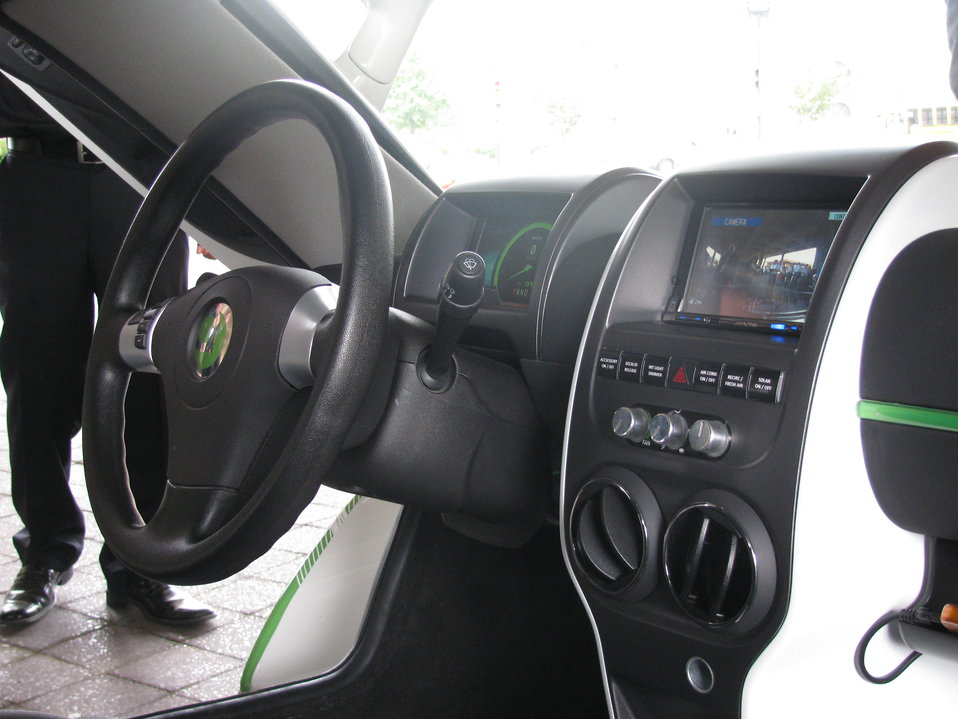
X Prize 004